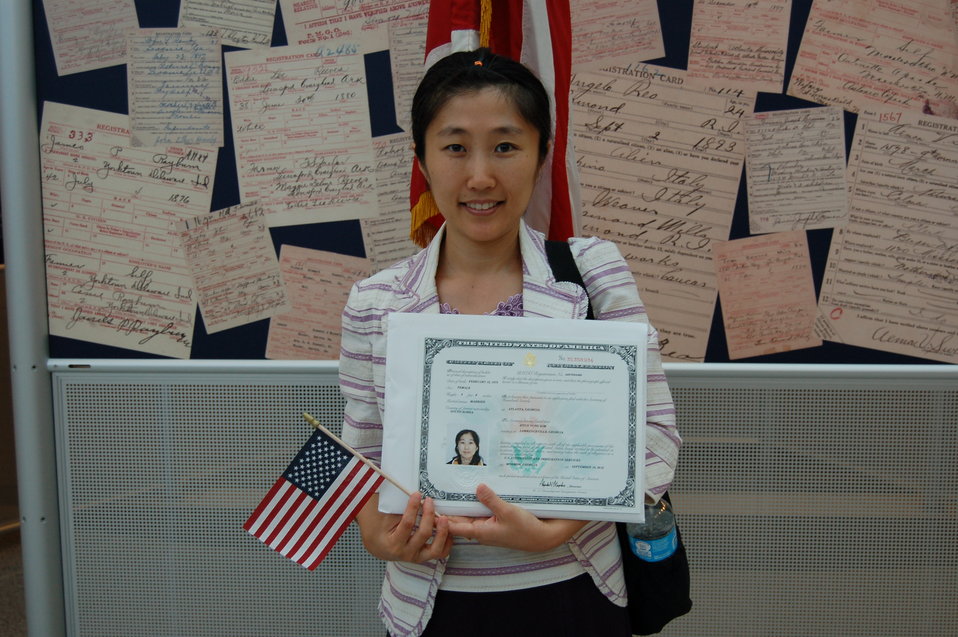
New Citizens